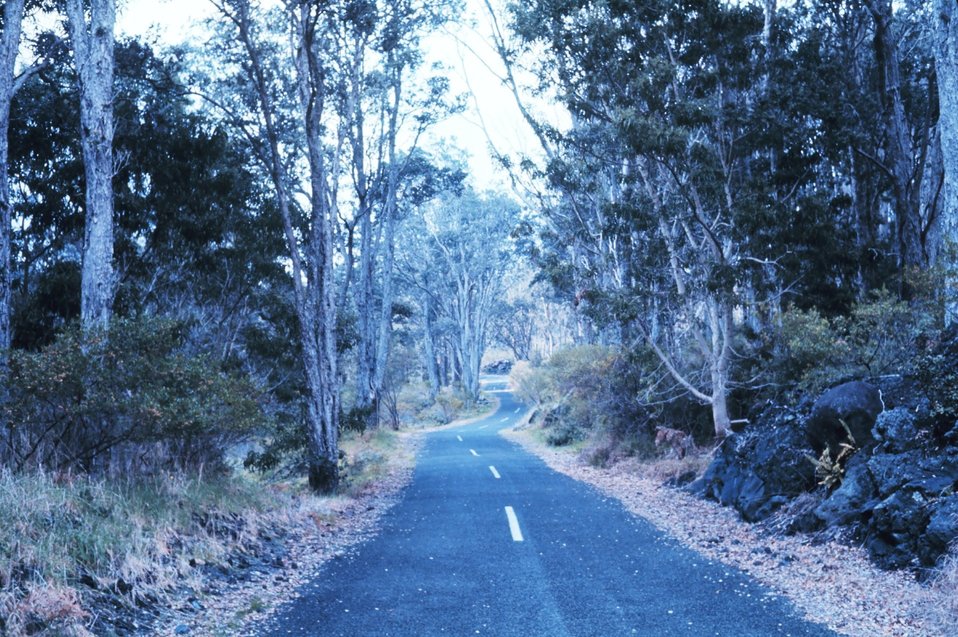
A scene along Chain of Craters Road with a recent lava flow seen to right.